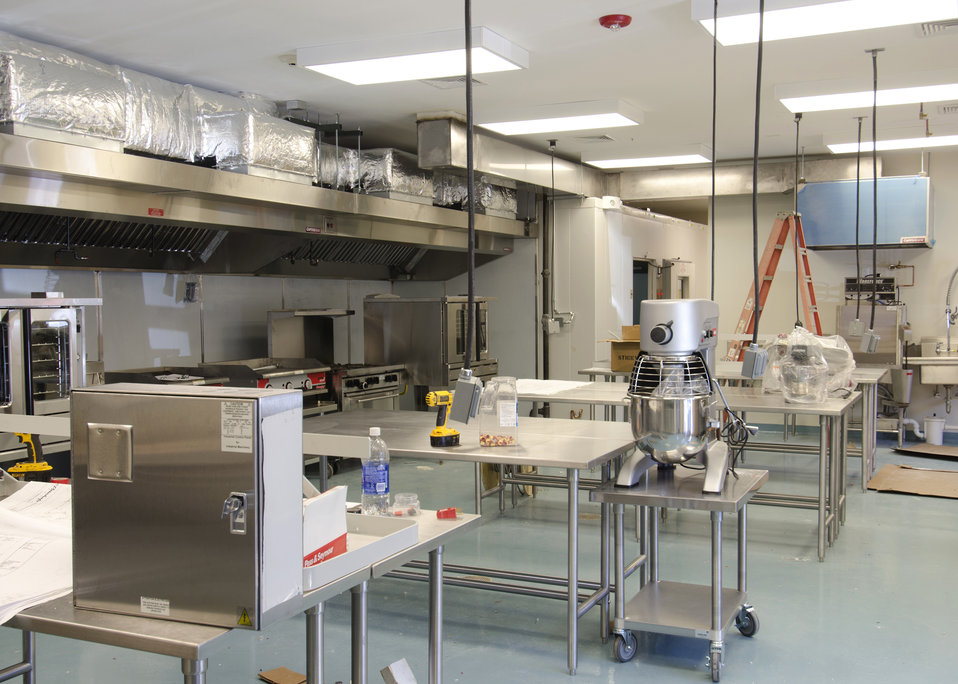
YorKitchen is a shared incubator kitchen that received partial funding through the U. S. Department of Agriculture’s (USDA) Rural Development (RD) Rural Business Enterprise Grant (RBEG) program. This program provides grants for rural projects that finance and facilitate development of small and emerging rural businesses, distance- learning networks, and employment related adult education programs. YorKitchen is a commercially equipped and fully licensed kitchen in which new entrepreneurs can prepare new products without the associated start up costs. This “incubator kitchen” provides full business support to include invoicing, accounting, advertising, outreach, and marketing for entrepreneurs. The YorKitchen is housed in the annex of Central Market in York, PA. This location offers local agricultural producers increased opportunities to develop new value-added products with their produce.